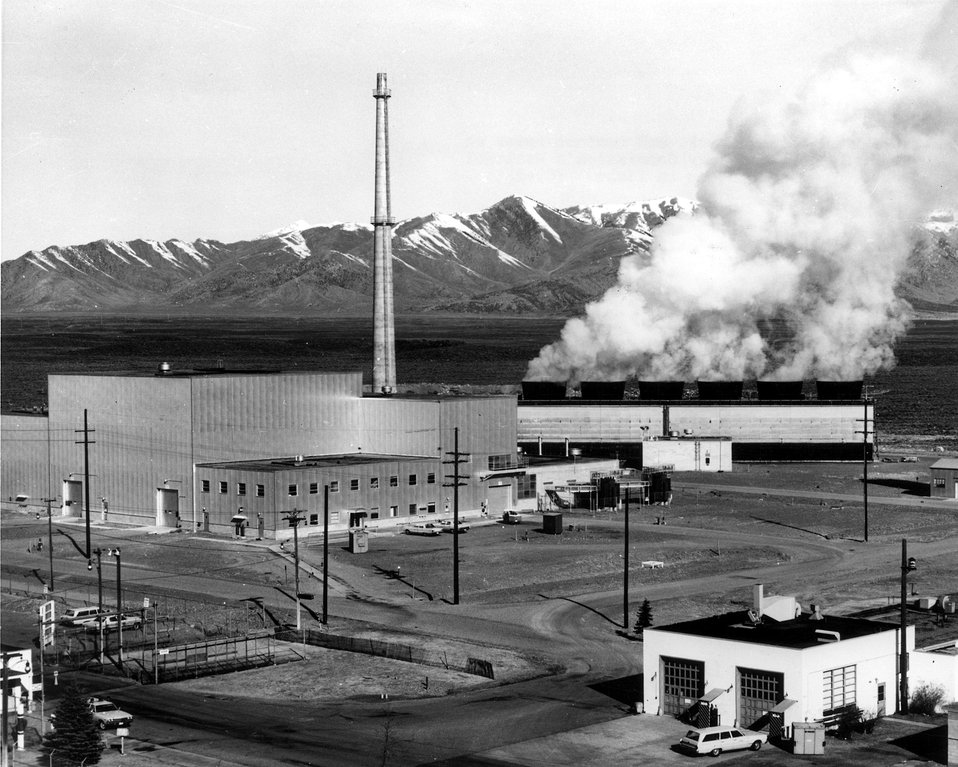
The ATR building, stack, and coolant tower at the U.S. Atomic Energy Commission's National Reactor Testing Station in Idaho. Circa 1974.